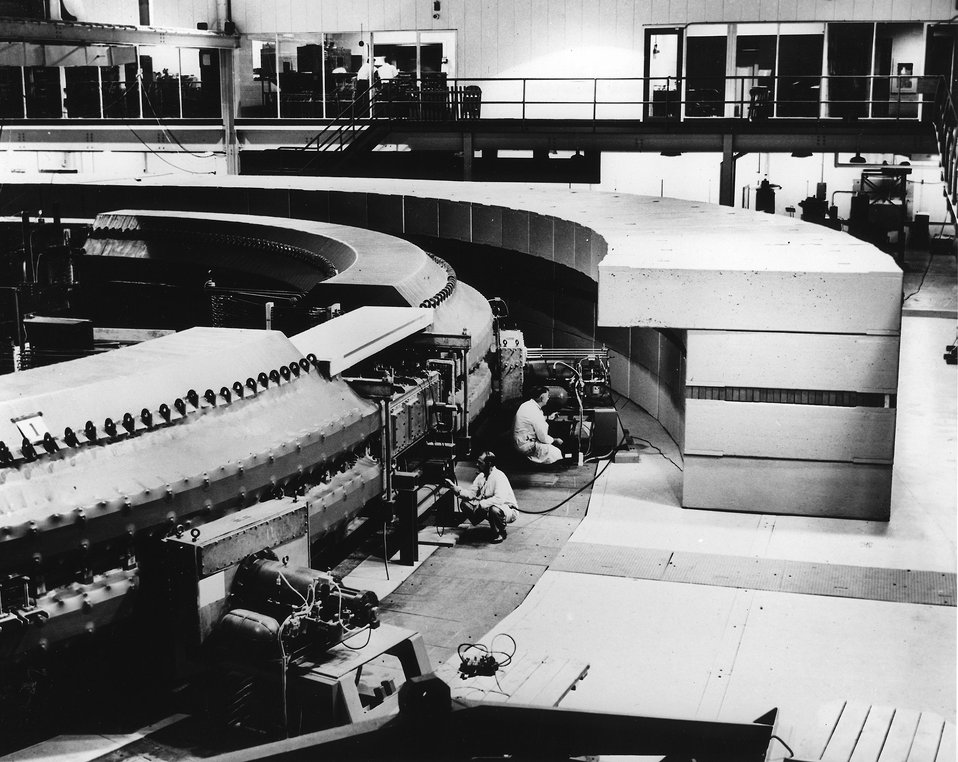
The 3 BEV Cosmotron at the Brookhaven National Laboratory. c. 1961